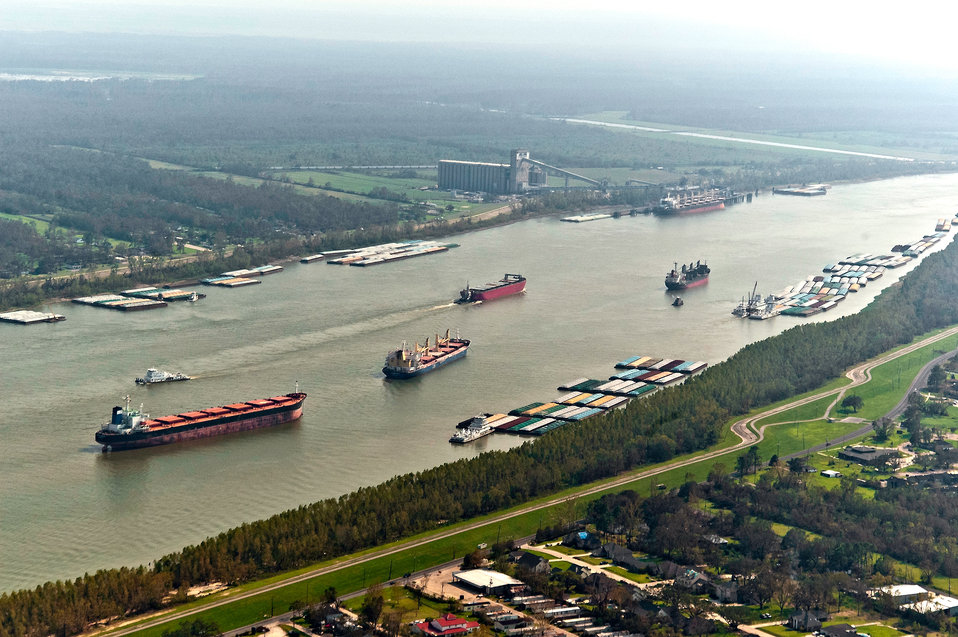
Barge and ship traffic transporting export cargo on the Mississippi River in the Port of New Orleans, New Orleans, LA on Sept. 9, 2005.